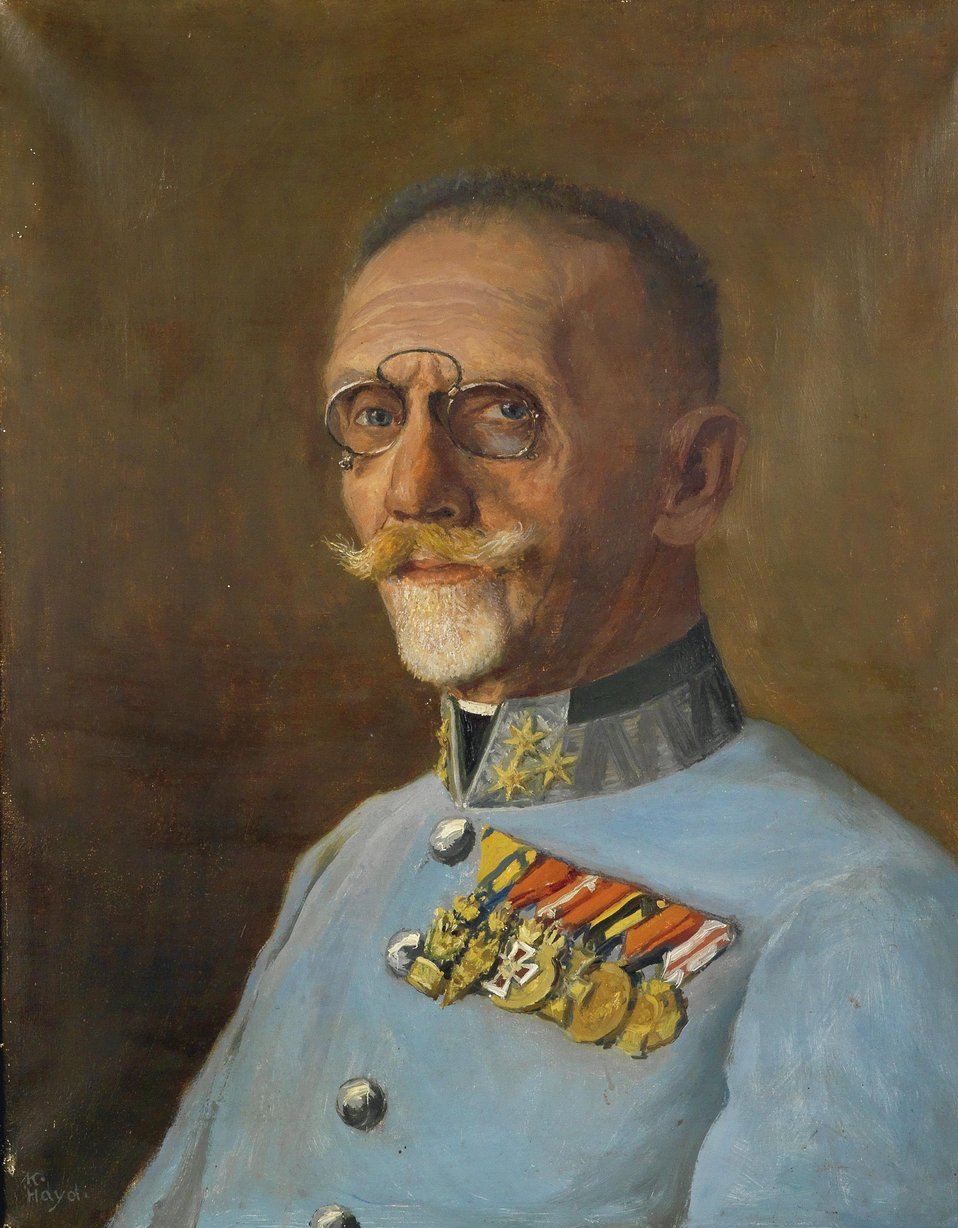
Porträt des Oberst der Pioniertruppe Franz (ab 1918 von) Berger (1861–?). Öl auf Leinwand, links unten signiert K. Haydi, (Waffenrock der Pioniertruppe mit stahlgrüner Egalisierung und silbernen Knöpfen, auf dem Stehkragen die silberne Stabsoffiziersborte mit drei goldgestickten Distinktionssternen, auf der linken Brustseite reiche Ordensdekoration, u. a. Orden der Eisernen Krone 3. Klasse mit der Kriegsdekoration). 57 x 45 cm